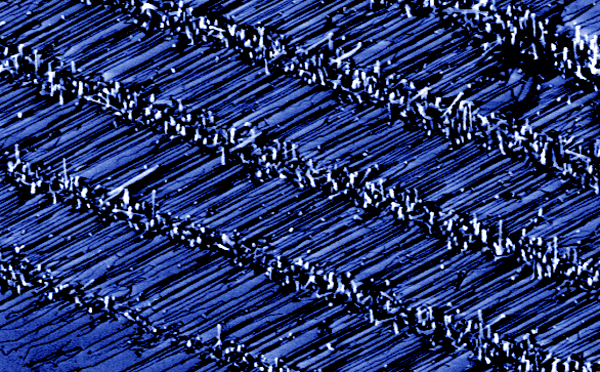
Gold Nano Anchors Put Nanowires in Their Place

Scanning electron microscope image shows rows of horizontal zinc-oxide nanowires grown on a sapphire surface. The gold nanoparticles are visible on the ends of each row.